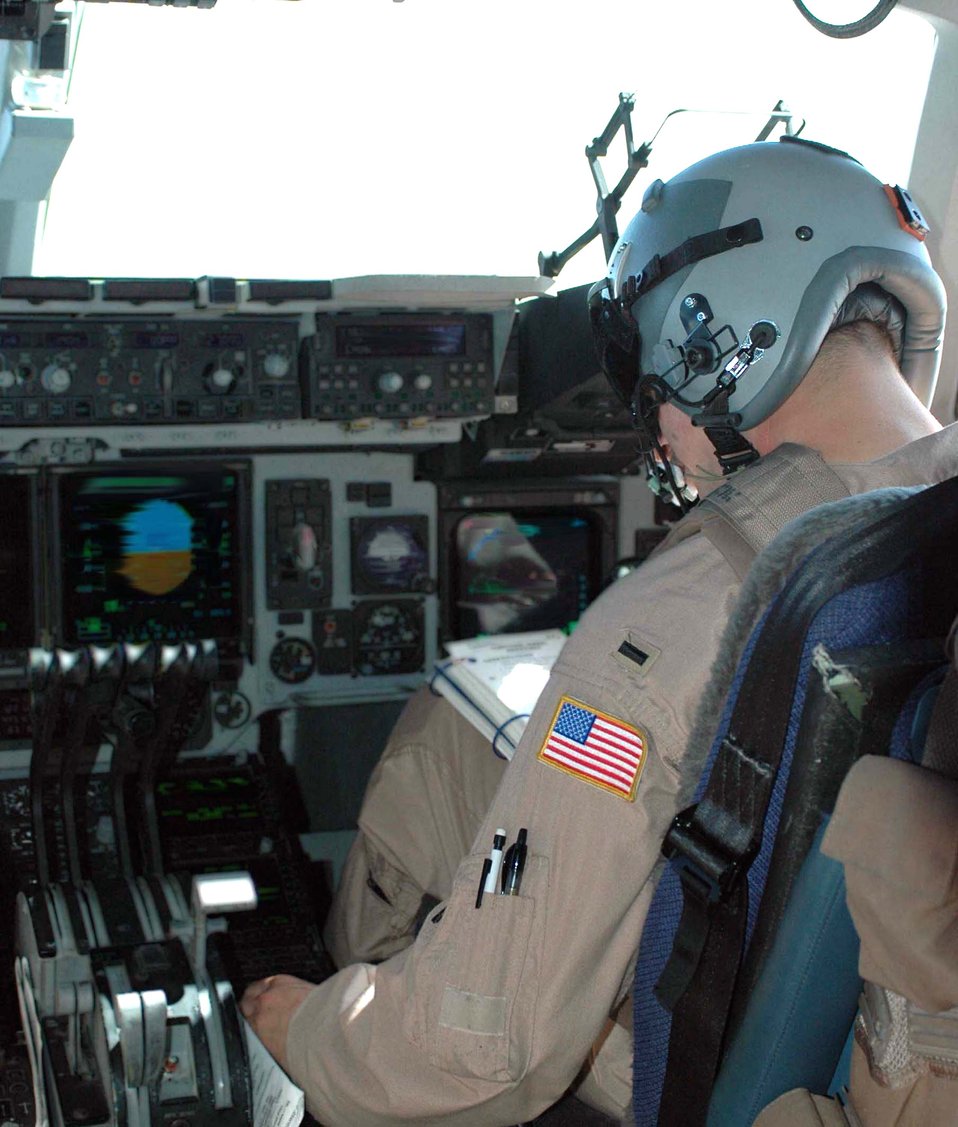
Global missions all in a day's work

First Lt. Steven Byrum makes altitude adjustments during an Operation Enduring Freedom mission over Southwest Asia on Aug. 8. He is a C-17 Globemaster III pilot with Detachment 1 of the 817th Expeditionary Airlift Squadron.